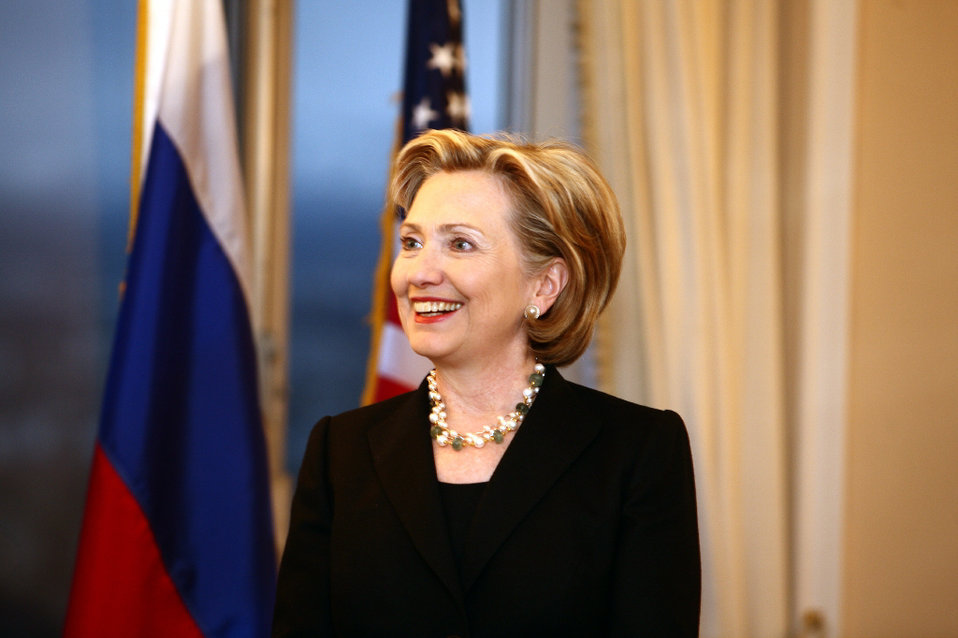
'Restart Button'

Press conference after dinner meeting between U.S. Secretary of State Hillary Rodham Clinton and Russian Foreign Minister Sergey Lavrov in Geneva, Switzerland March 6, 2009.